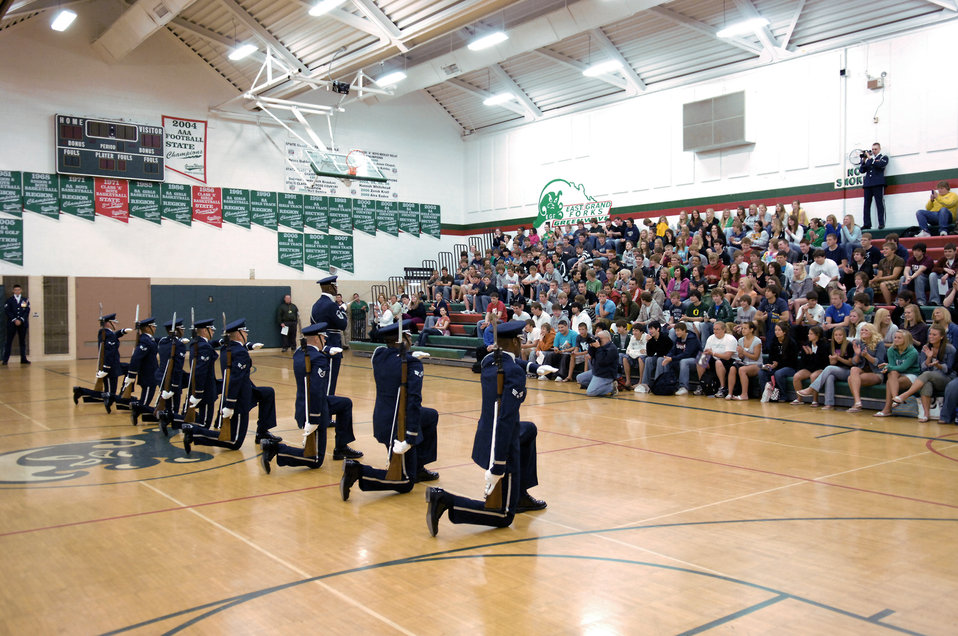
Drill team provides northern exposure for Air Force

Students at East Grand Forks High School hold a special assembly May 7 to watch the Air Force Honor Guard Drill Team perform at Grand Forks, N.D. The drill team is the traveling component of the Air Force Honor Guard and tours world-wide representing all Airmen and showcasing Air Force precision to recruit, retain and inspire for the Air Force mission.